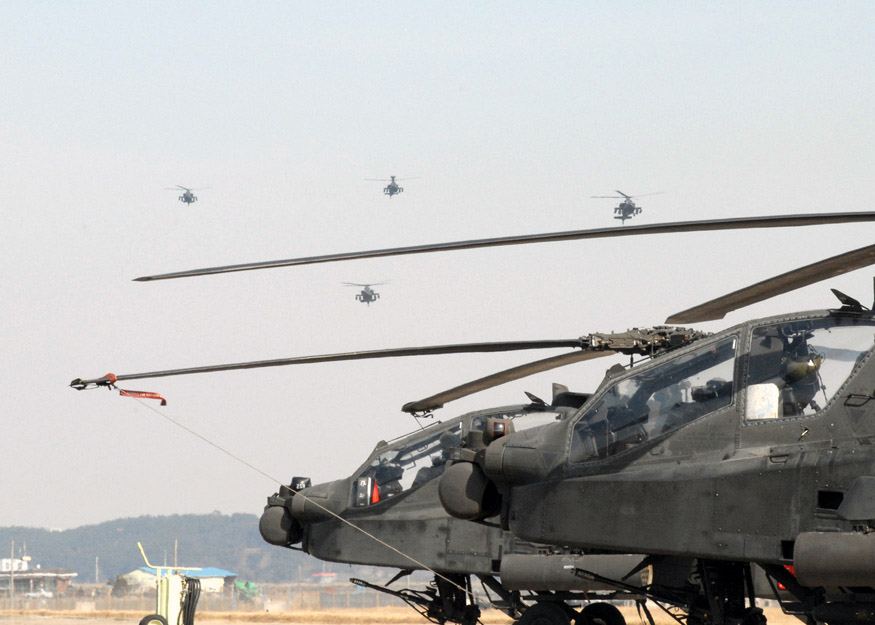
Korea Air Component Comand commander holds 6 ACCES

A second wave of AH-64 Apache helicopters arrive March 1 at Kunsan Air Base, South Korea. The Apache's arrived from Camp Humphrey's, Bravo Company 4-2, as part of the Key Resolve/Foal Eagle Exercise, enhancing combat readiness and joint interoperability.